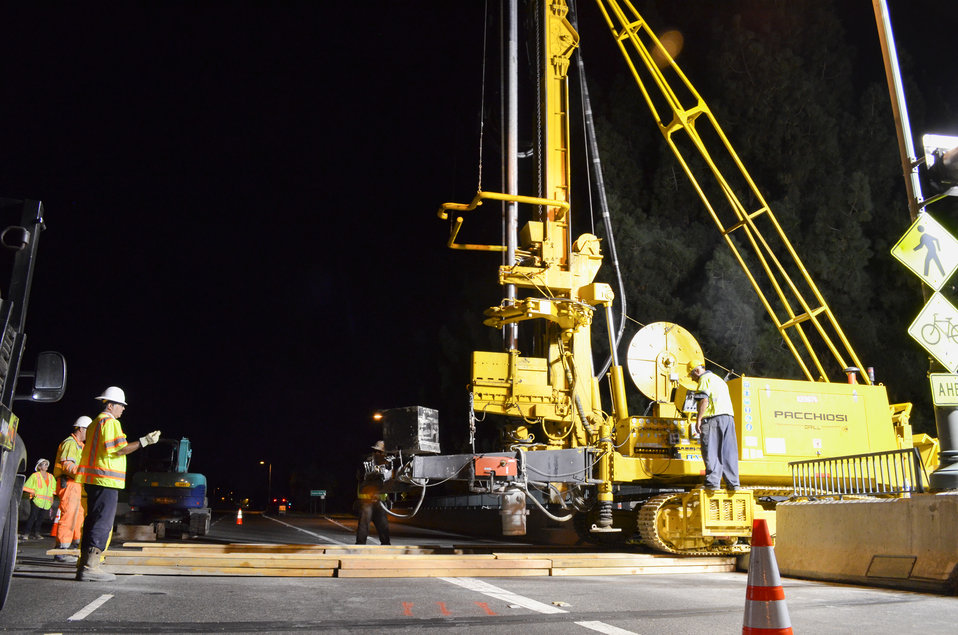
A jet-grout drill crosses Sacramento's Watt Avenue bridge

U.S. Army Corps of Engineers construction crews use wooden planks to help a jet-grout drill cross a closed portion of Watt Avenue bridge in Sacramento, Calif., Aug. 15, 2013. Corps representatives, the project contractor and the California Highway Patrol closed three lanes of traffic during non-commute hours in order to drill through the bridge to access the levee.